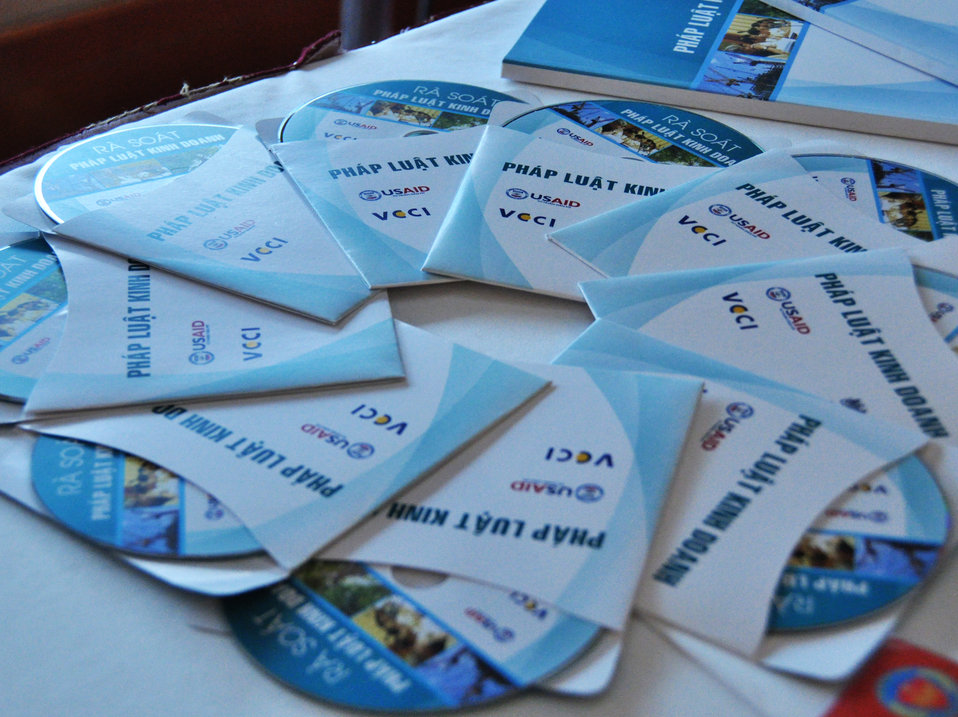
USAID's Support for Trade Acceleration Project (USAID STAR Plus) Closing Ceremony

Hanoi, August 26, 2013.